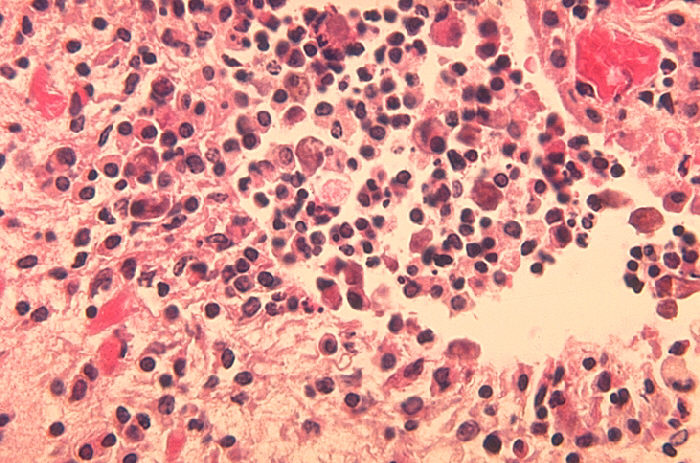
Histopathology of Acanthamoeba polyphaga infection in mouse brain.